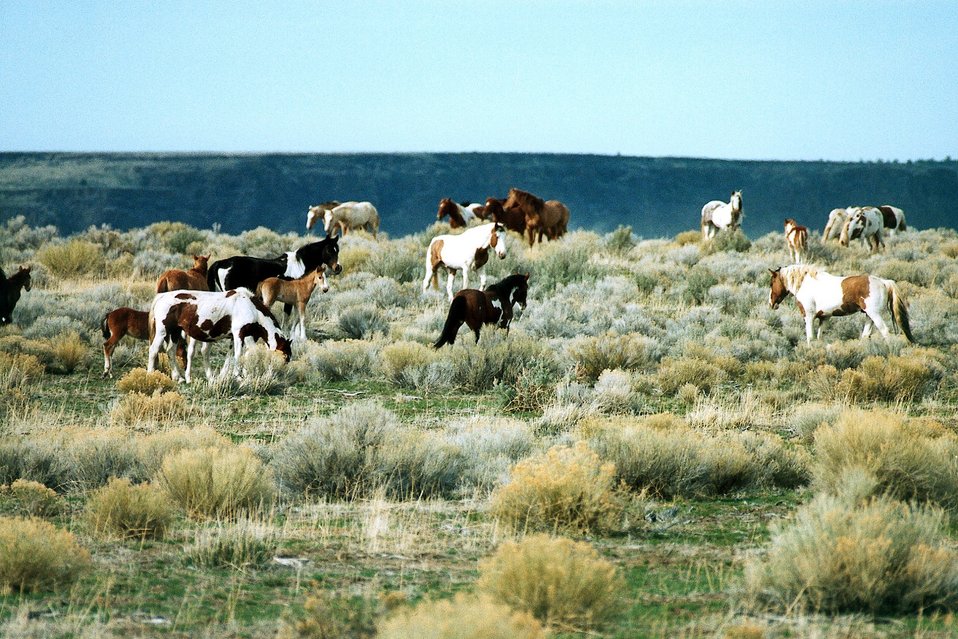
Medium shot of wild horse herd grazing on South Steens prairie.